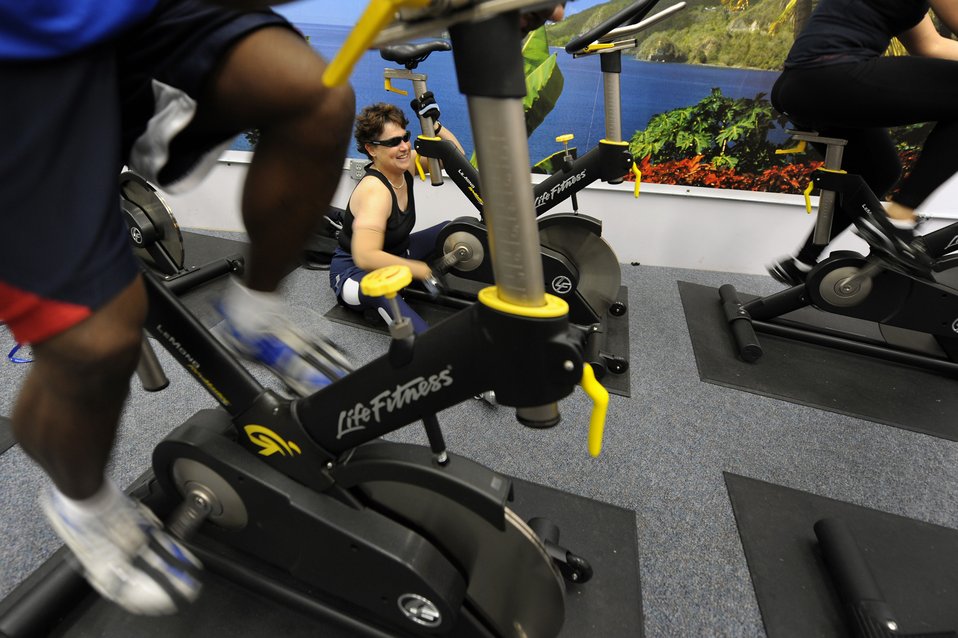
Training camp ends

Jeanne Goldy-Sanitate (center) prepares for the inaugural Warrior Games May 7, 2010, by working out in a spin class during her last day of training camp at the Air Force Academy in Colorado Springs, Colo. Ms. Goldy-Sanitate is competing along with 17 other Air Force Athletes during the Warrior Games competition through May 14 at the U.S. Olympic Training Center in Colorado Springs.